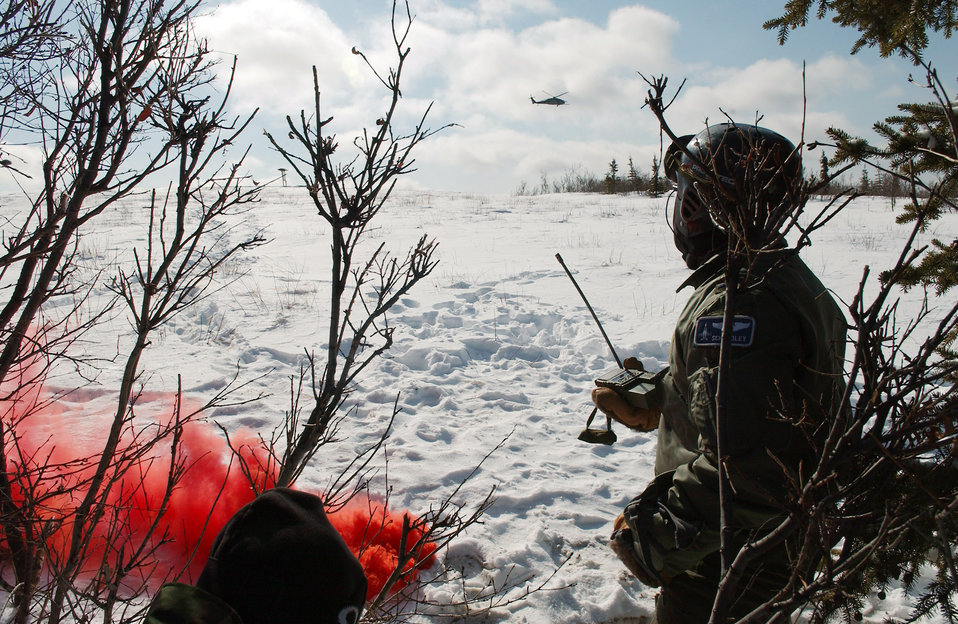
Can you see me now?

Using red smoke to signal the nearby HH-60 Pave Hawk, 1st Lt. Alex Goldberg participates in the Red Flag-Alaska exercise April 16 at Eielson Air Force Base, Alaska. Lieutenant Goldberg is a